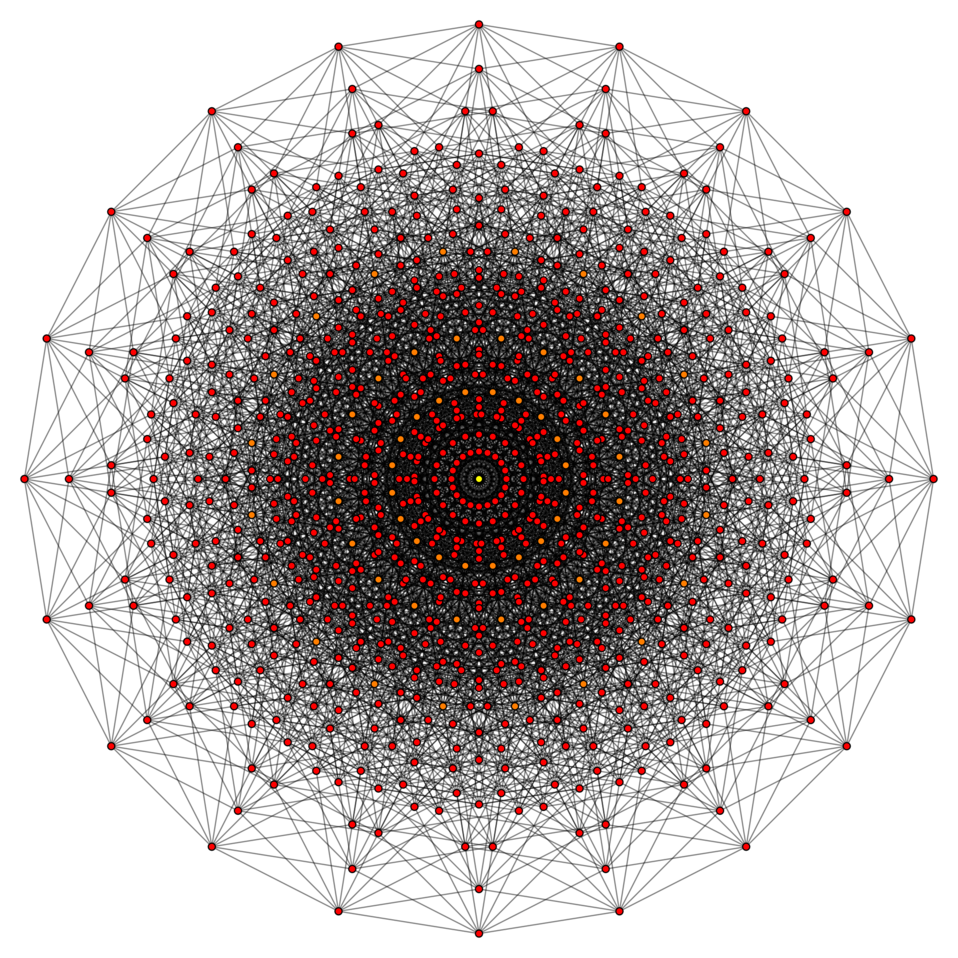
10-cube dekeract graph